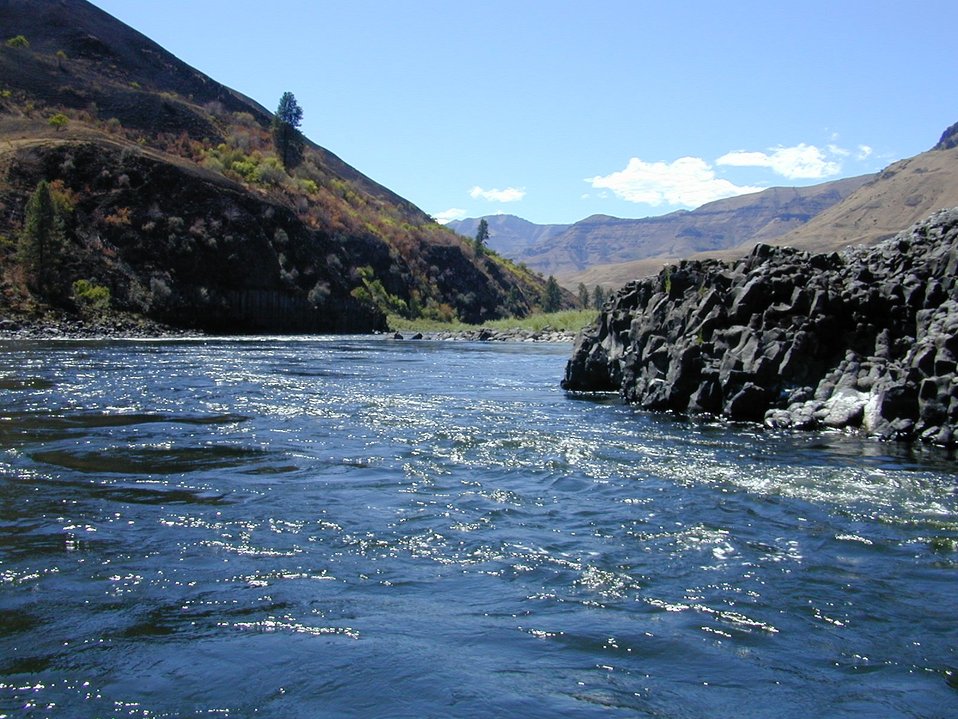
Scenic shot of Lower Salmon River Cottonwood Field Office UCSC Upper Columbia Salmon Clearwater District